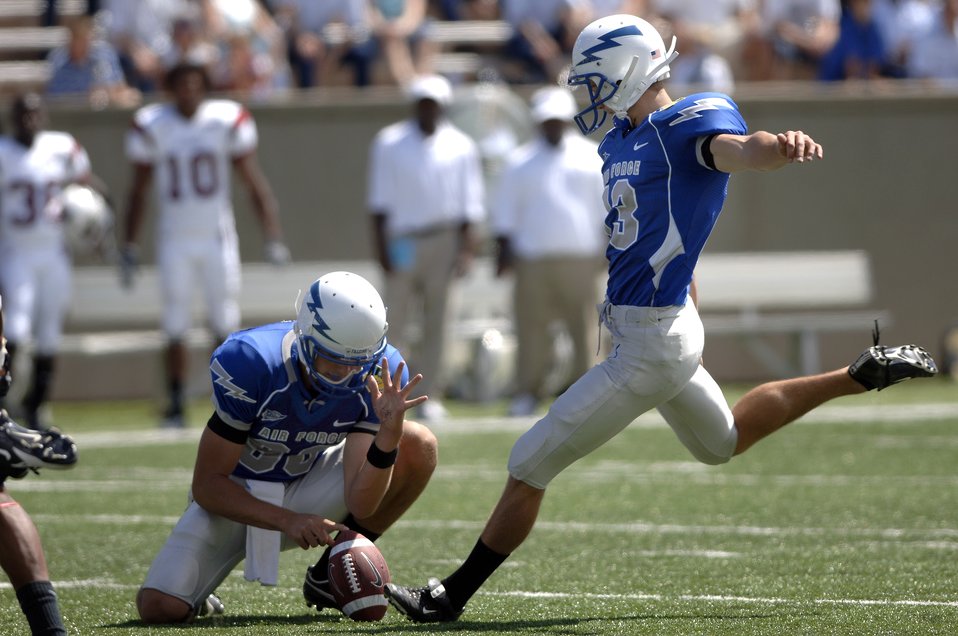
Calhoun era kicks off with 34-3 win

Air Force place kicker Ryan Harrison lines up a field goal attempt as Brandon Geyer holds for the boot against South Carolina State Sept. 1 at Falcon Stadium. Harrison scored 10 points in his Air Force debut.